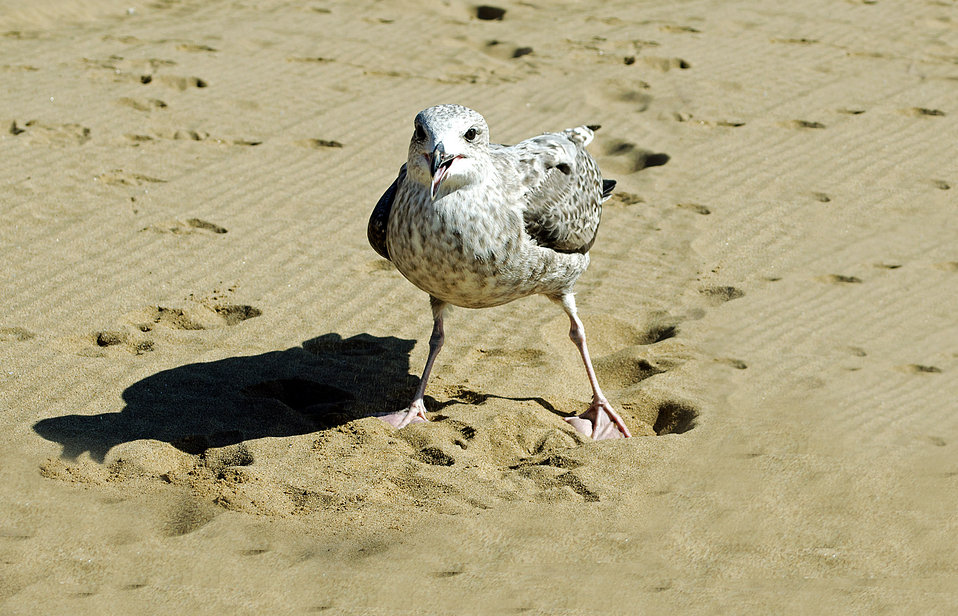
Seagull - macro.